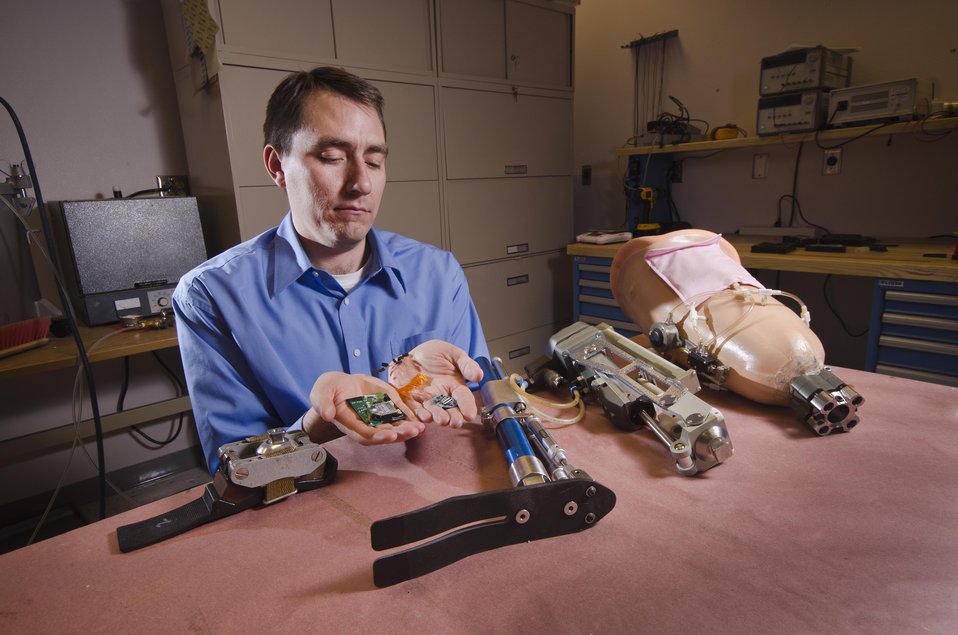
At Sandia National Laboratory, robotics engineer displays implantable and wearable neutral interface electronics developed by the lab as he sits in the Prosthetics Lab with a display of prosthetic components.

The lab is working on ways to improve amputees' control over prosthetics with direct help from their own nervous system.